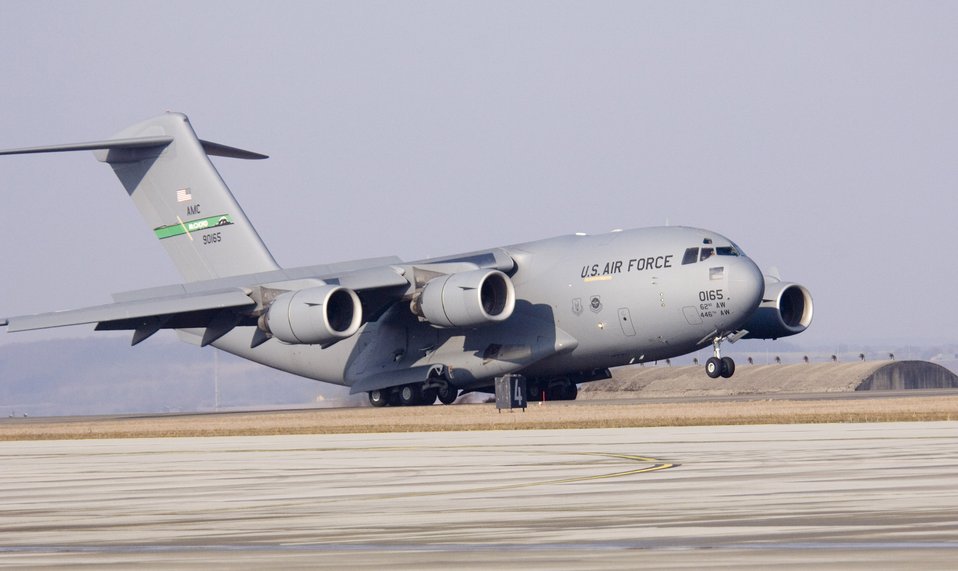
Airlift Gas-n-Go

A C-17 Globemaster III lands at Spangdahlem Air Base, Germany, Wednesday, March 22, 2006. The transport, from McChord Air Force Base, Wash., will receive services from Spangdahlem's 726th Air Mobility Squadron.